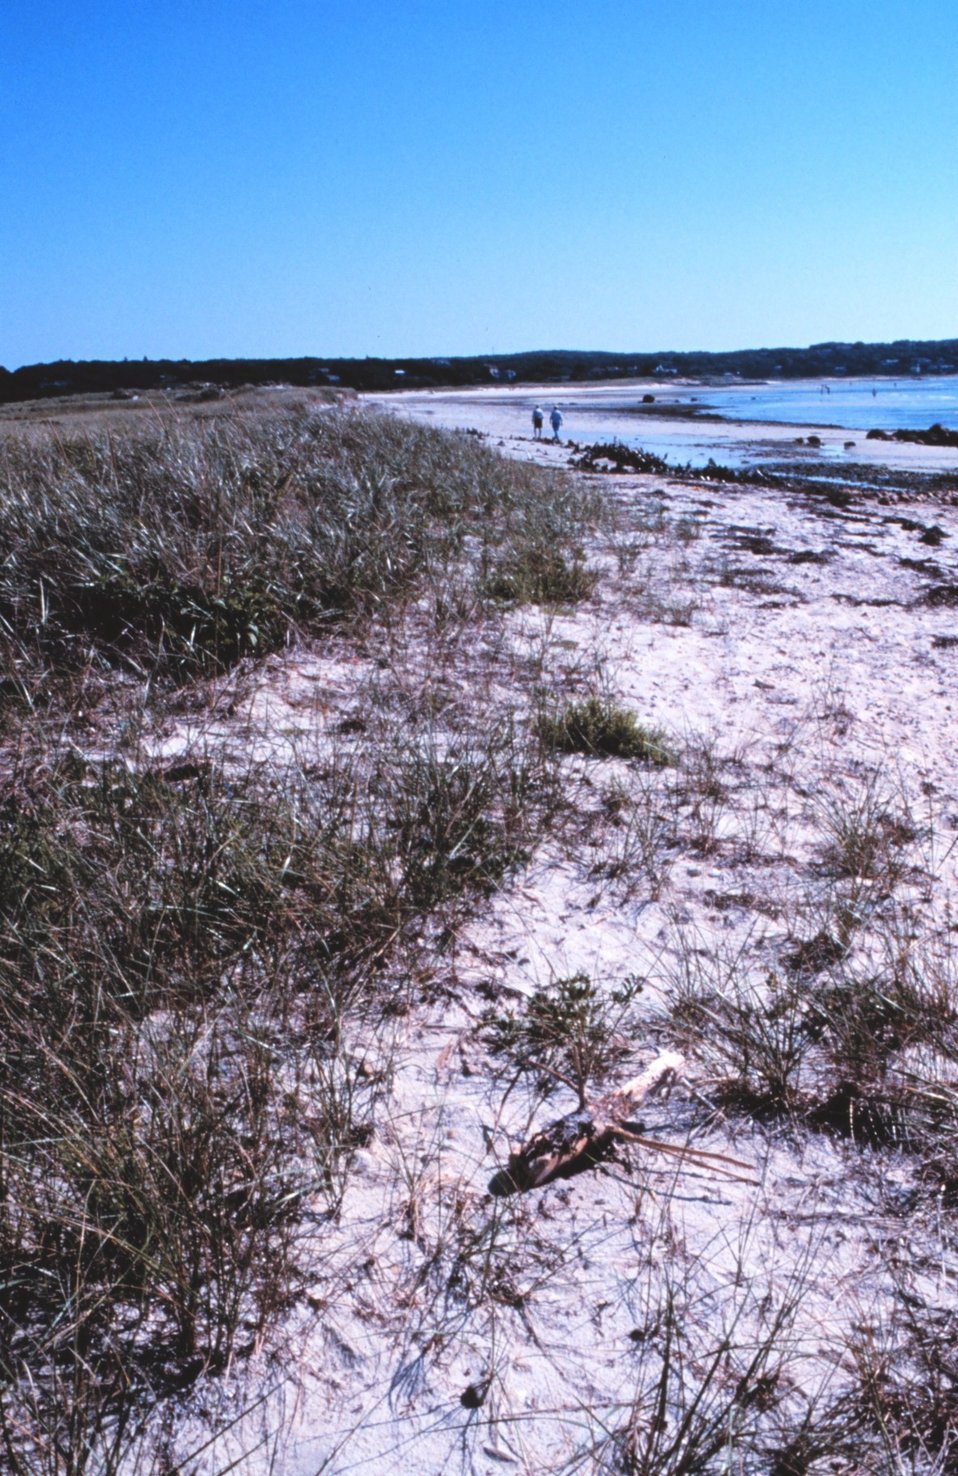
Black Beach, West Falmouth